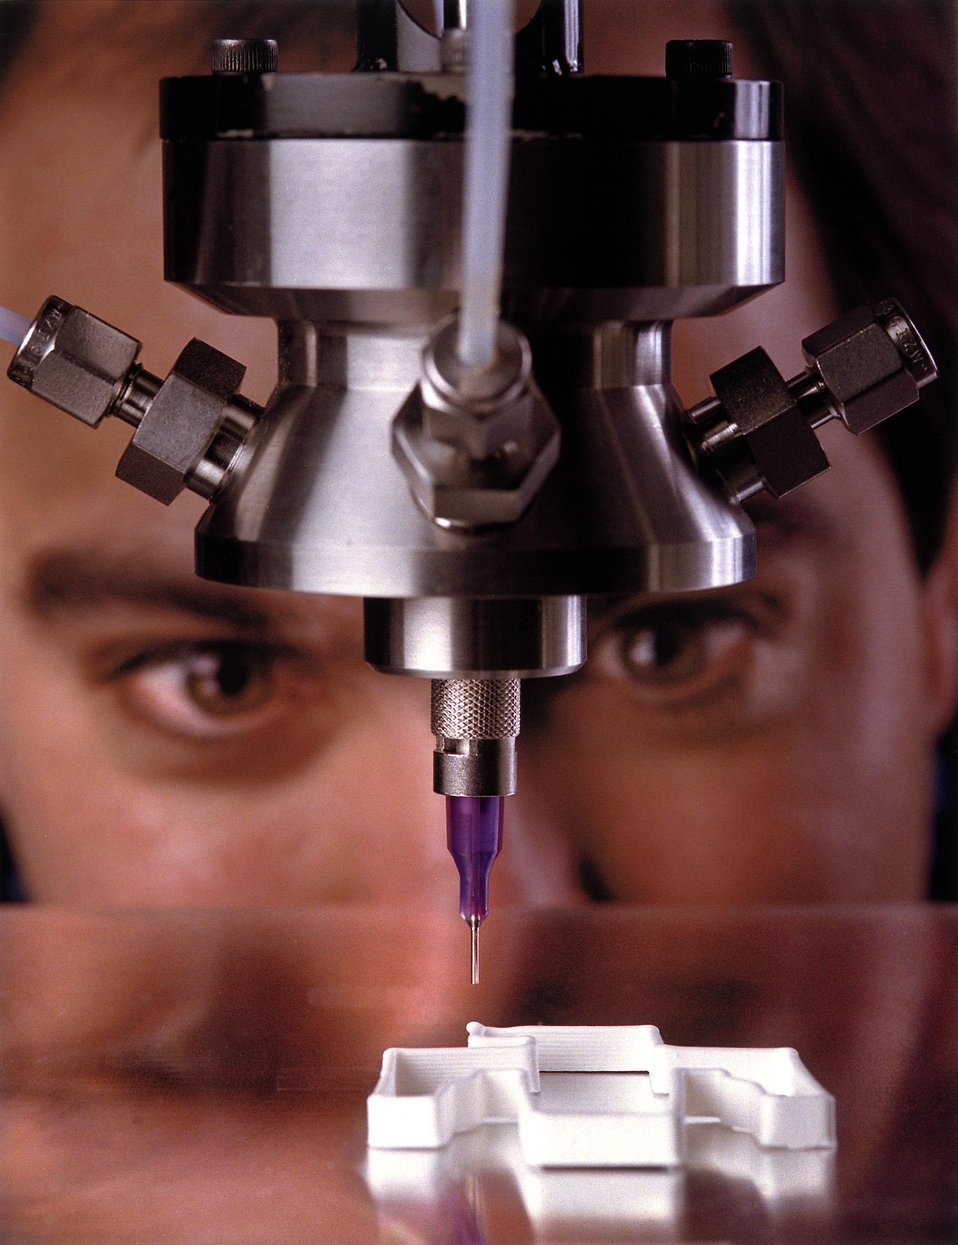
ROBOCASTING, A NEW WAY TO FABRICATE CERAMICS, REQUIRING NO MOLDS OR MACHINING.

SANDIA ENGINEER JOE CESARANO DEVELOPED ROBOCASTING, A NEW WAY OF FABRICATING CERAMICS. INSTEAD OF MOLDS OR MACHINING, ROBOCASTING RELIES ON ROBOTICS FOR COMPUTER-CONTROLLED DEPOSITION OF CERAMIC SLURRIES (MIXTURES OF CERAMIC POWDER, WATER AND TRACE AMOUNTS OF MODIFIERS) THROUGH A SYRINGE. THE MATERIAL IS DEPOSITED IN THIN SEQUENTIAL LAYERS ONTO A HEATED BASE.